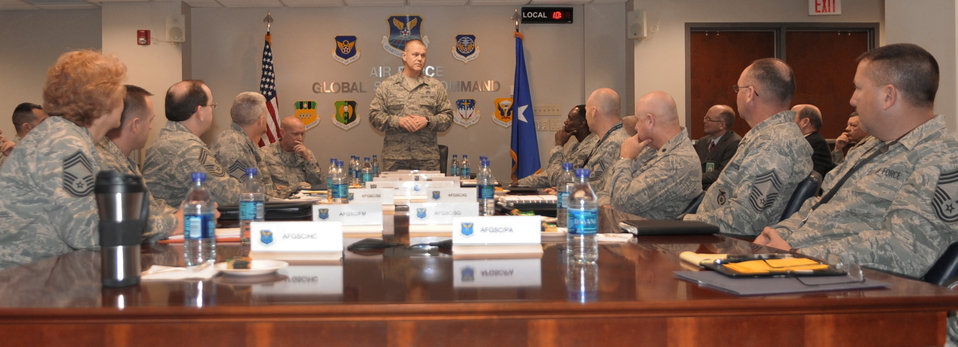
Chief Roy: Global Strike is a mission we can't forget

Chief Master Sgt. of the Air Force James A. Roy speaks to Air Force Global Strike Command leaders during his visit to Barksdale Air Force Base, La., March 8, 2011. This was the chief's second visit to an AFGSC installation within a week, following his recent visit to F.E. Warren AFB, Wyo.